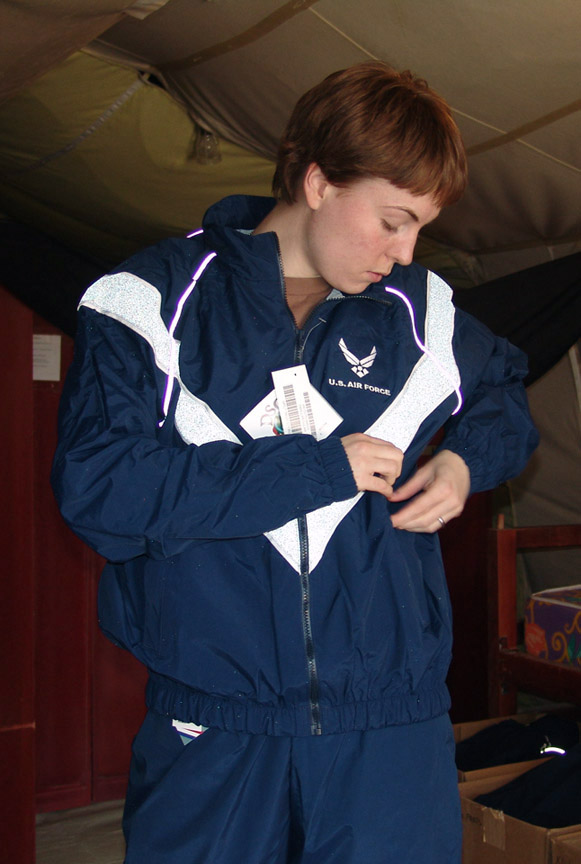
PT-ready!

SOUTHWEST ASIA -- First Lt. Danielle Boz checks the fit of a new Air Force physical training uniform jacket at a forward-deployed location. The jacket and matching warm-up pants combine with new Air Force PT shorts and shirts to give Airmen a uniform they can wear both off-duty and while exercising. Lieutenant Boz is an intelligence officer assigned to the 386th Air Expeditionary Wing.